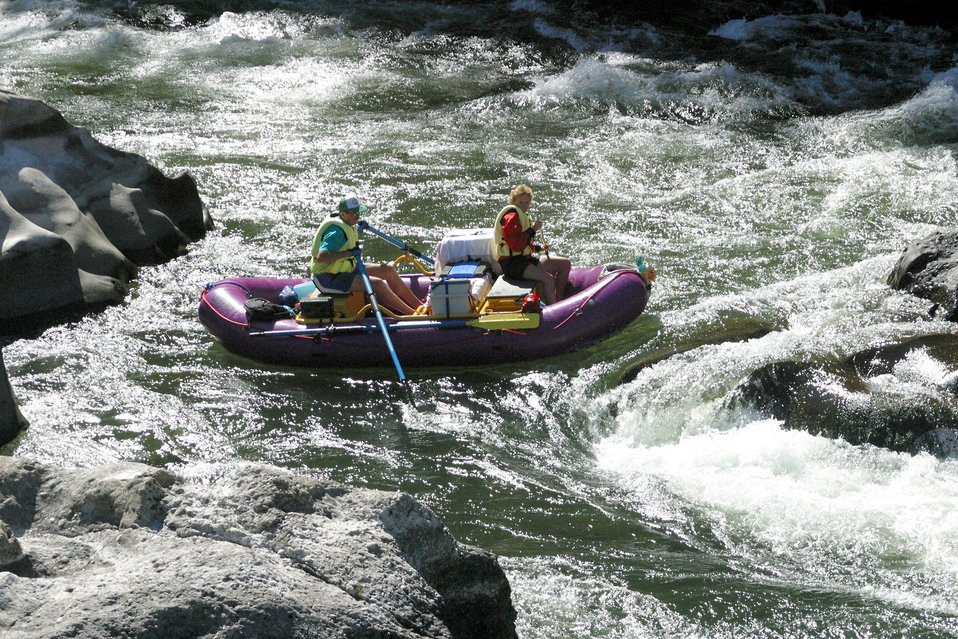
Boaters negotiate Blossom Rapids.